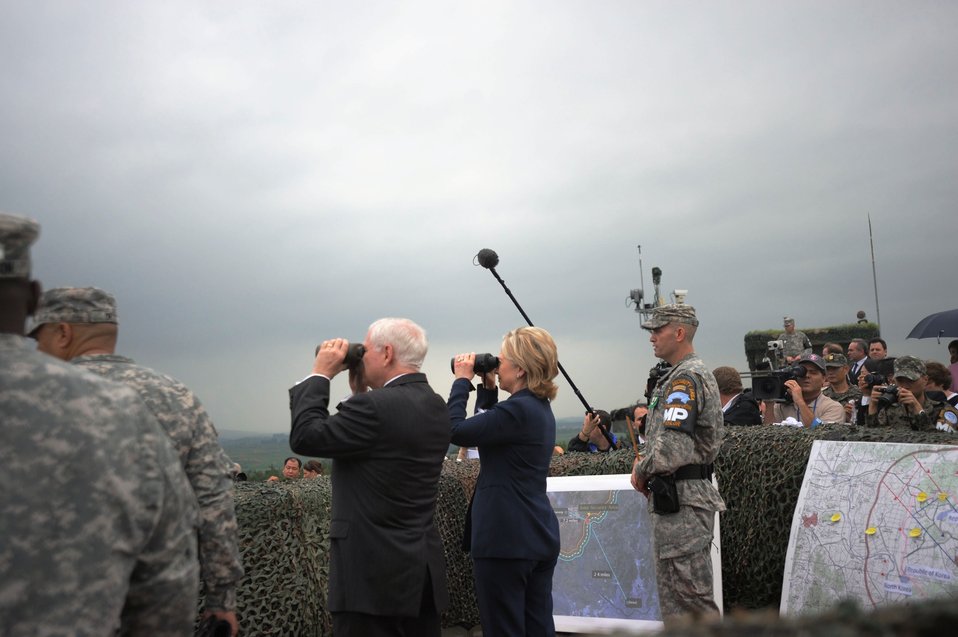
Secretary Clinton and Secretary Gates Look Out Over the Military Demarcation Line (MDL)

U.S. Secretary of State Hillary Rodham Clinton and U.S. Secretary of Defense Robert M. Gates look out over the Military Demarcation Line (MDL) into North Korea at Observation Point Ouellette in Panmunjom, South Korea, on July 21, 2010.